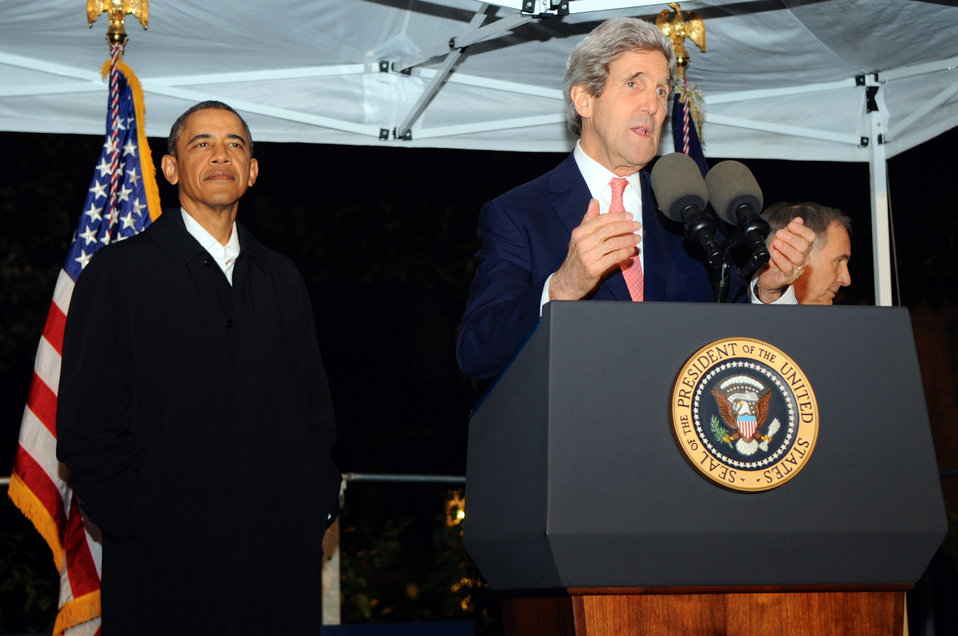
Secretary Kerry Introduces President Obama to Tri-Mission Rome Staff

U.S. Secretary of State John Kerry introduces President Obama before he addresses the Tri-Mission Rome State Department staff to Italy, the Holy See, and UN agencies in Rome on March 27, 2014.